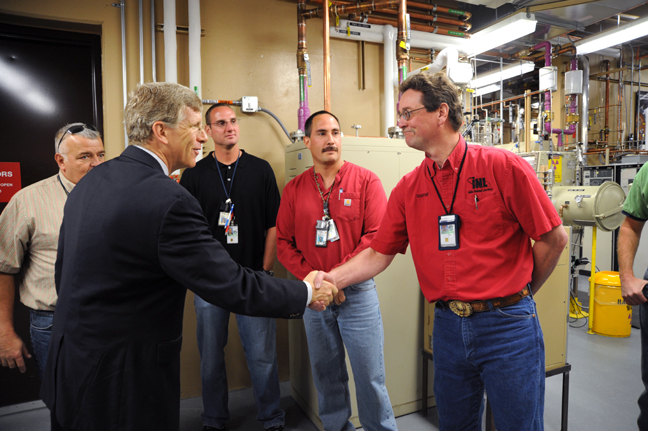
P-6250-29 72 dpi

Undersecretary Poneman greets employees at the Space and Security Power Systems Facility. Here heat and power sources are assembled for use in space and national security missions.